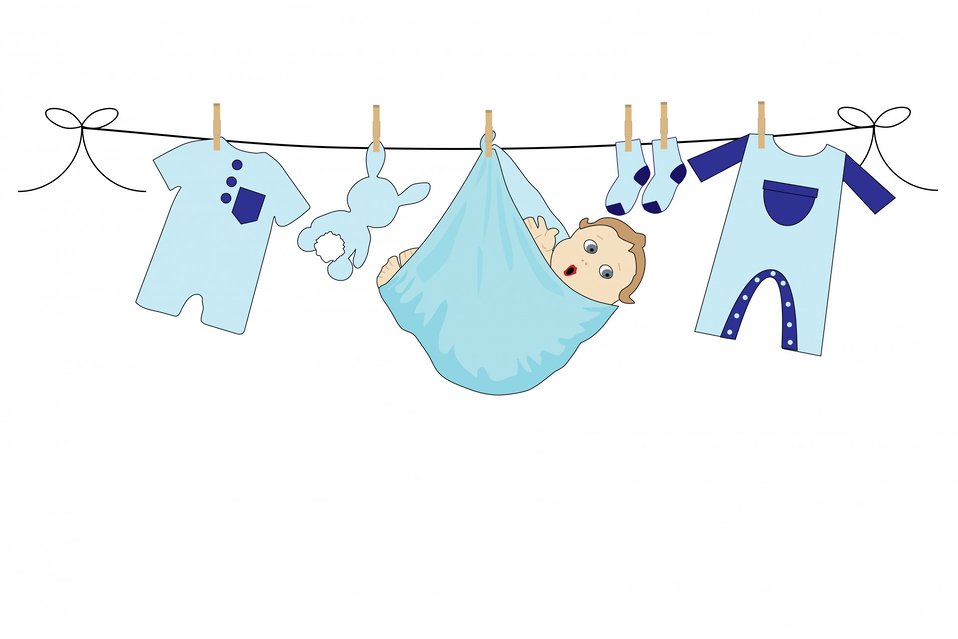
Baby boy clothes line

Cute baby boy dangling from a clothes washing line for scrapbooking.